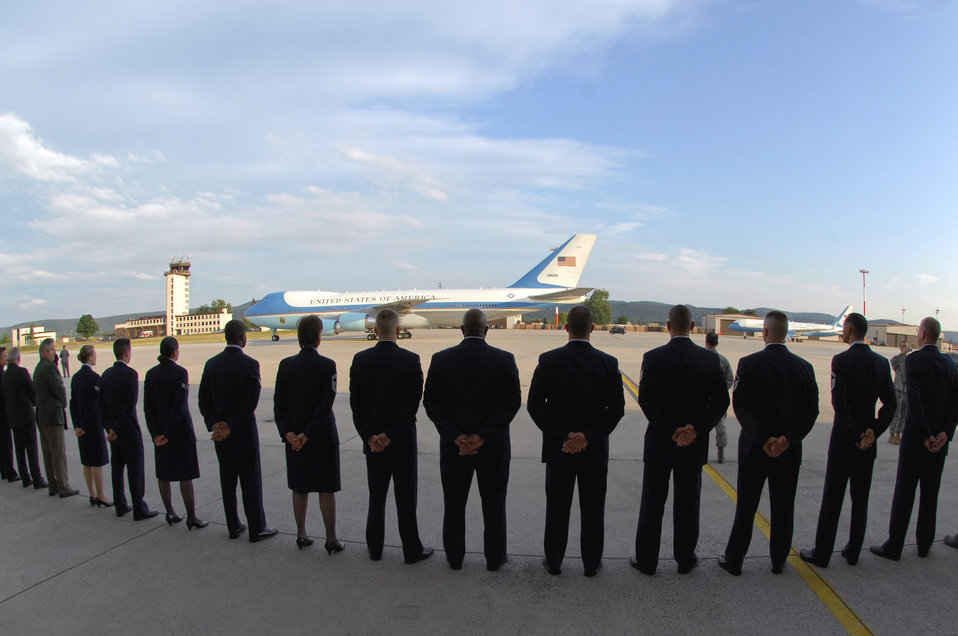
President makes stop at Ramstein Air Base

Airmen at Ramstein Air Base, Germany, stand at parade rest June 5 as Air Force One prepares to take off. President Barack Obama had stopped at Ramstein en route to nearby Landstuhl Regional Medical Center to visit wounded U.S. servicemembers being treated there.